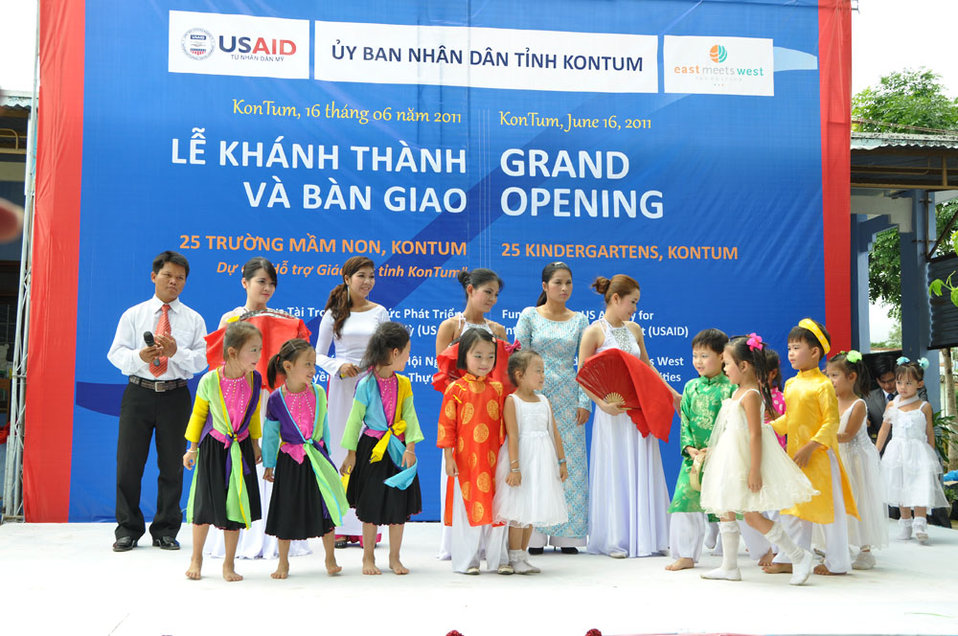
Children celebrate 25 refurbished and expanded kindergartens.